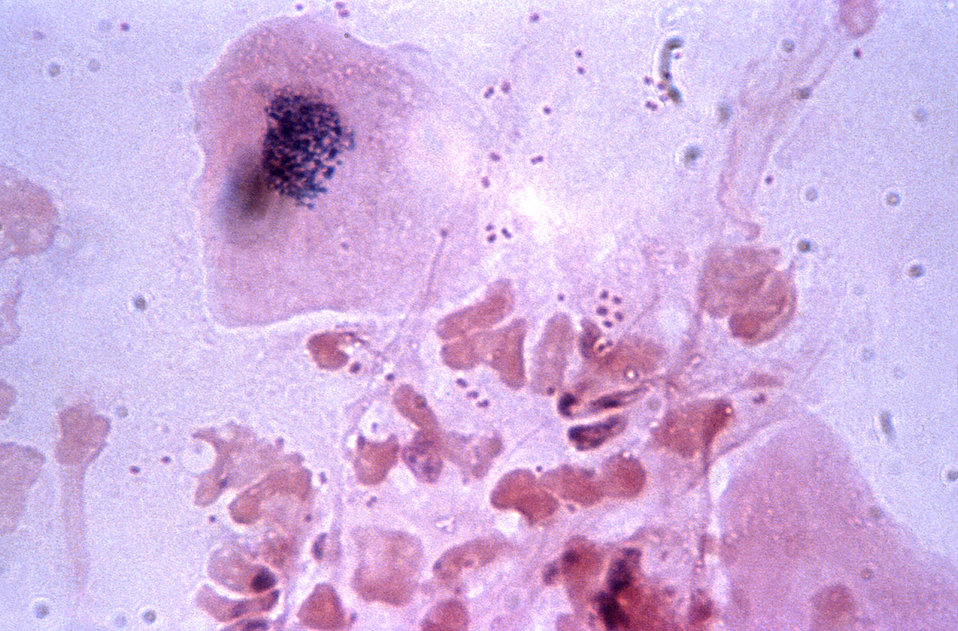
This micrograph depicts a number of polymorphonuclear leukocytes (PMN), and accompanying extracellular diplococci.